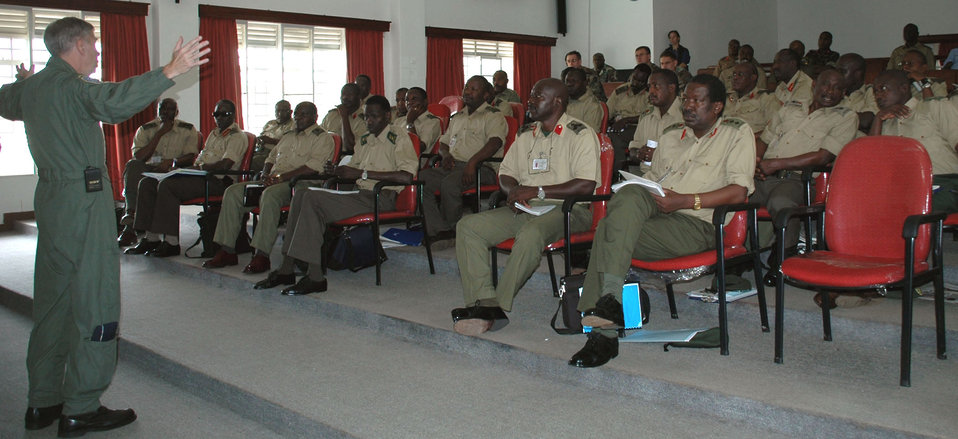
Ugandans get air power lesson

JINJA, Uganda -- Gen. Robert H.